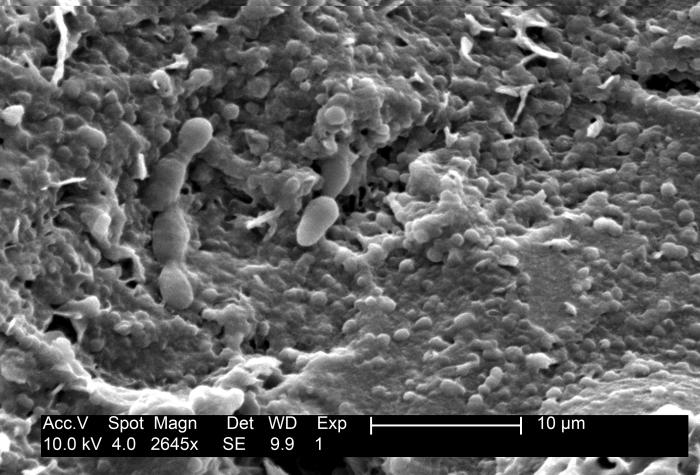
Magnified 2645X, this electron micrograph reveals the details of the textured surface found on a honeydew melon, Cucumis melo.Tips for Fresh Produce SafetyBuying Tips: